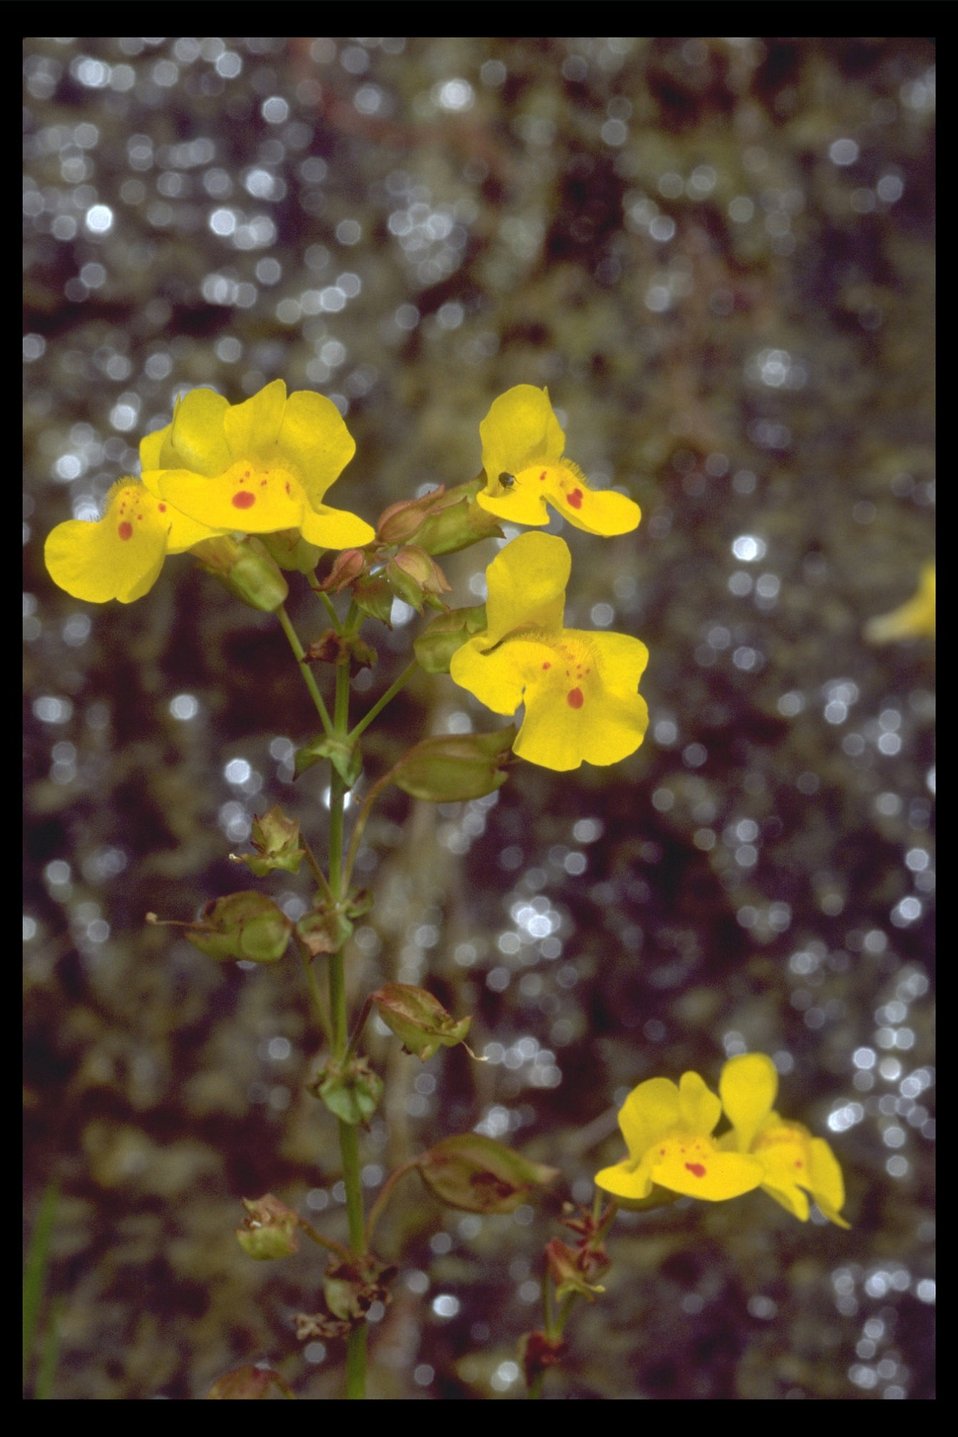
Seepspring Monkey Flower (Mimulus guttatus) along Crowfoot Road, east of Lost Creek.